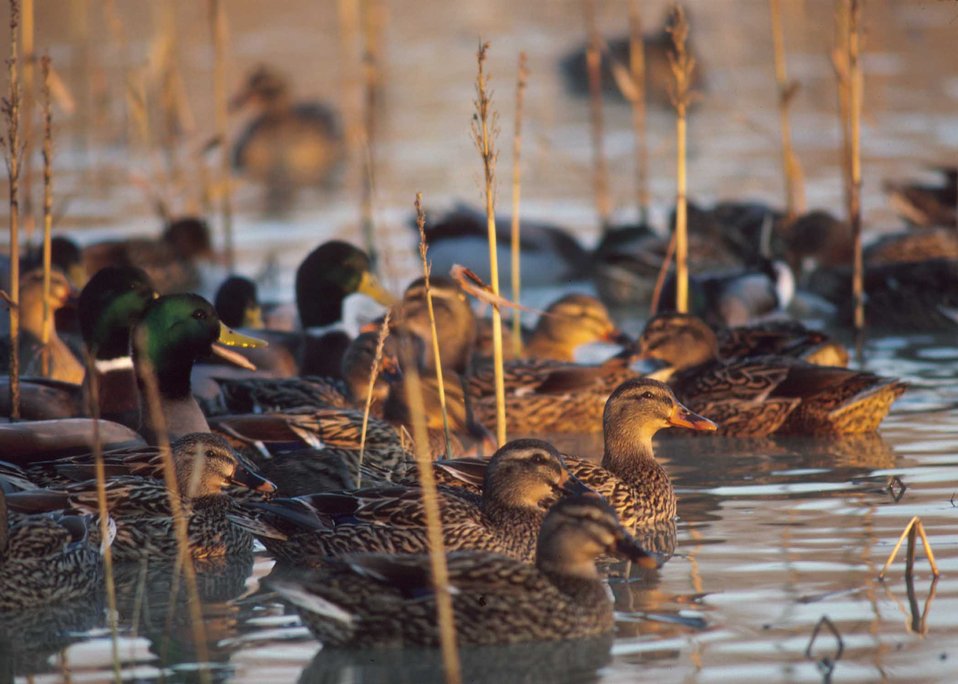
Ducks benefits from thousands of acres of wetlands in Maryland.